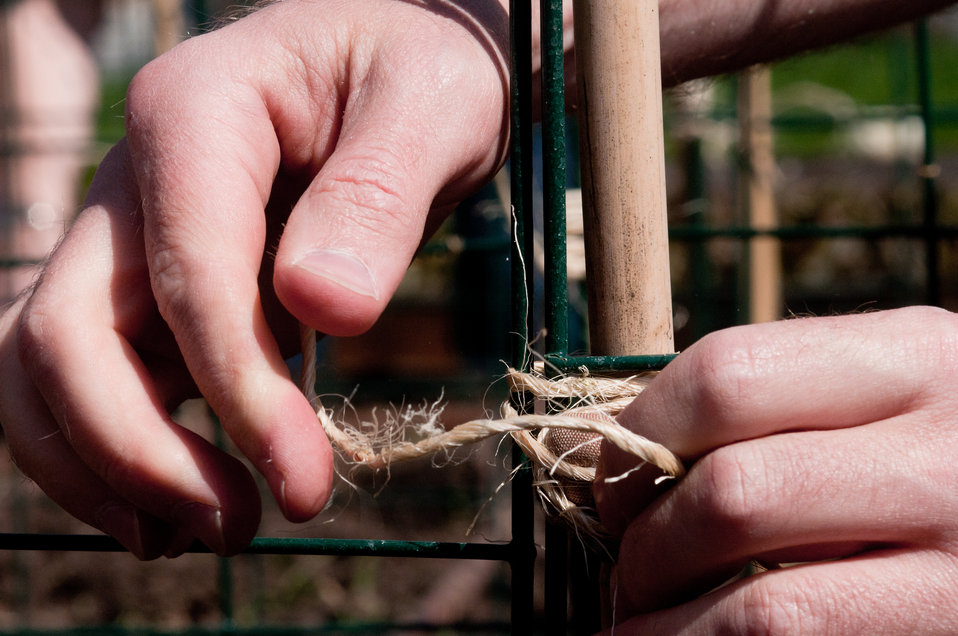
The People's Garden at the U.S. Department of Agriculture (USDA), Washington D.C., on Thursday, March 17, 2011. Volunteers pitch in several times a week, to weed, mulch, plant, water and what ever it takes to grow a wide variety of produce. Although a few are ornamental, most are destined for charity kitchens. Located on the corner of Jefferson Drive, SW and 12th St. SW, people often stop to ask questions about the garden. Part of the volunteers’ training is to be a spokesperson for the People's Garden Initiative, an effort by the USDA that challenges its employees to establish People's Gardens at USDA facilities worldwide or help communities create gardens. People's Gardens vary in size and type, but all have a common purpose - to help the community and the environment.